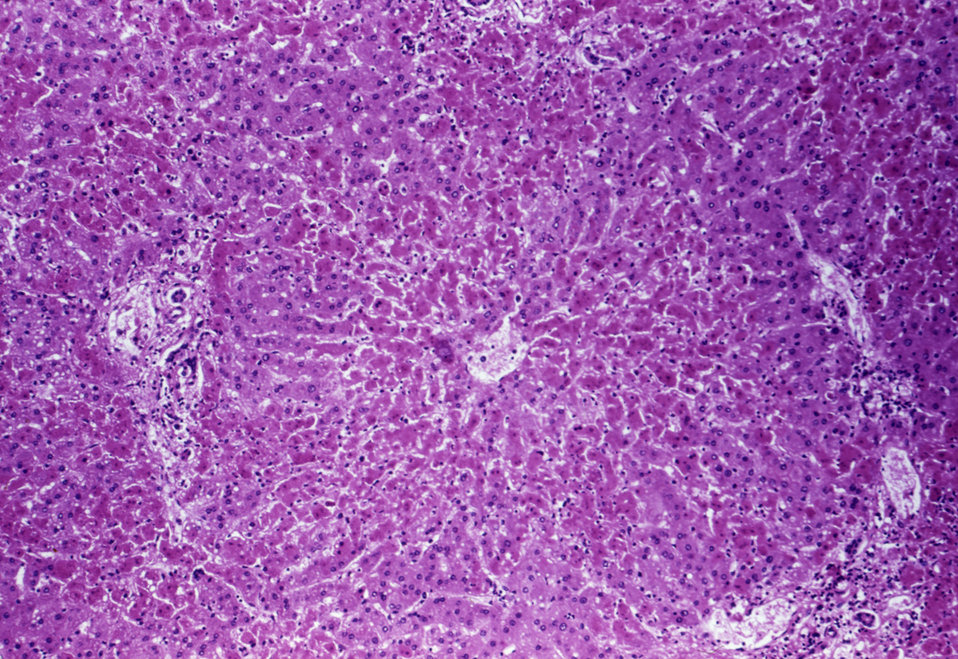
This photomicrograph revealed the cytoarchitectural histopathologic changes detected in a liver section of a Marburg patient (case #1) who became ill in Johannesburg, South Africa, 1975.